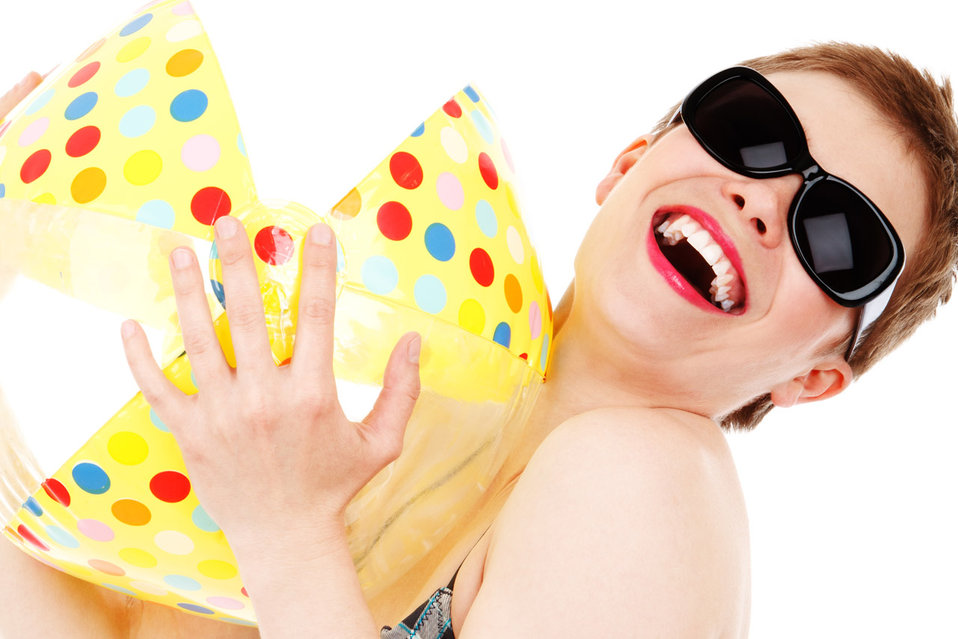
Woman with beach ball

Young woman smiling with a beach ball isolated on white background.